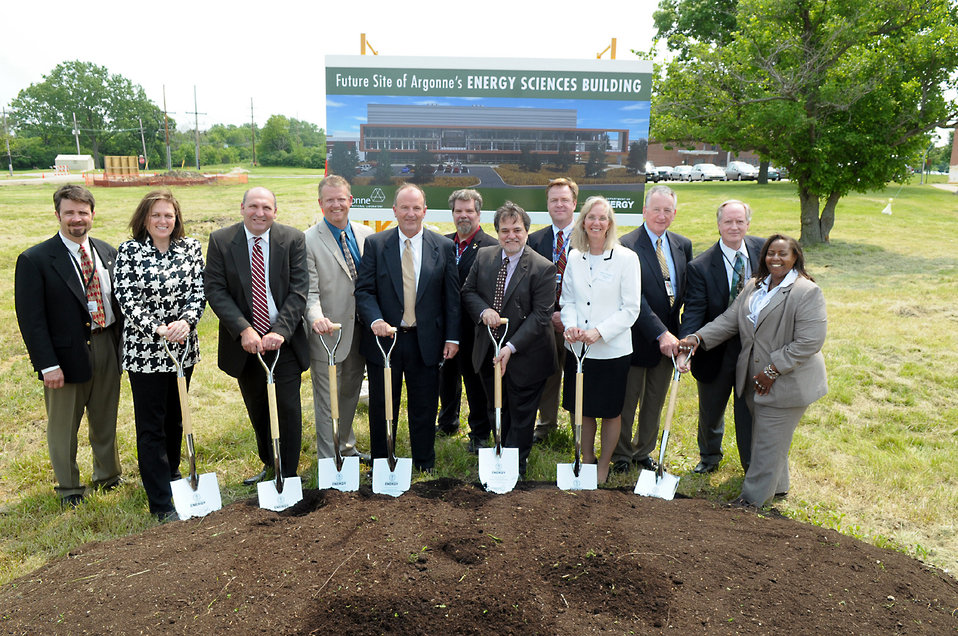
Energy Secretary Steven Chu speaks at the groundbreaking ceremony for Argonne National Laboratory's Energy Sciences Building.
The Energy Sciences building will house some 200 research personnel dedicated to addressing the world's most critical energy challenges. The facility will be key in getting our scientists and engineers to deliver on our mission; doing basic science to generate, supply, transmit, store and use new energy. The building will bring together many different scientists to collaborate and create new knowledge for this new economy. The building is scheduled to be complete in 2013.